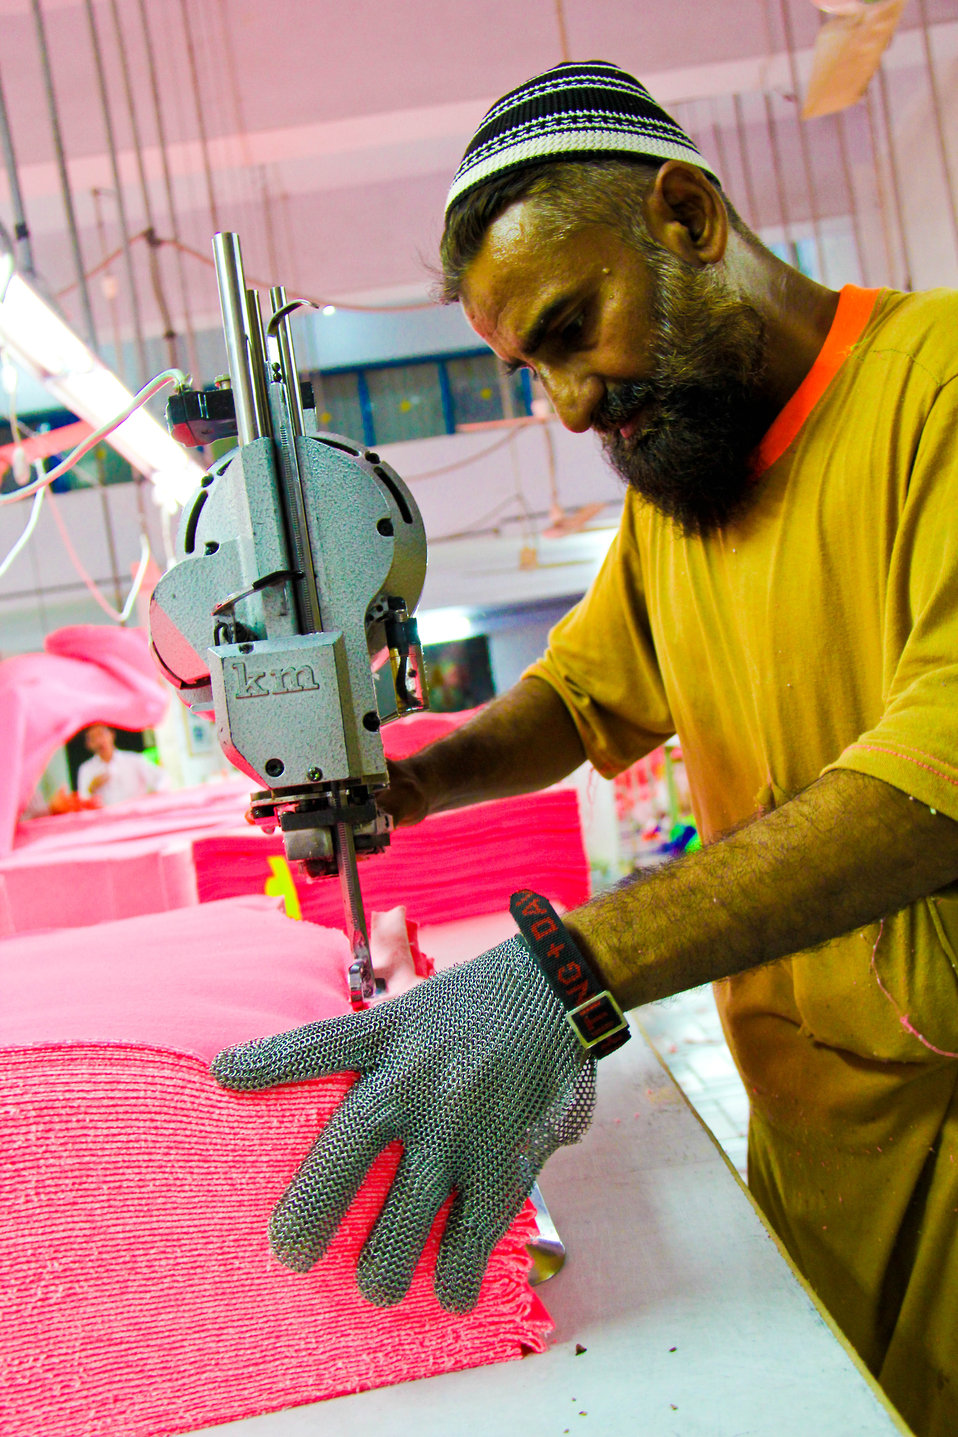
USAID's Firms project

A garment cutter at work in one of the project participant's factory